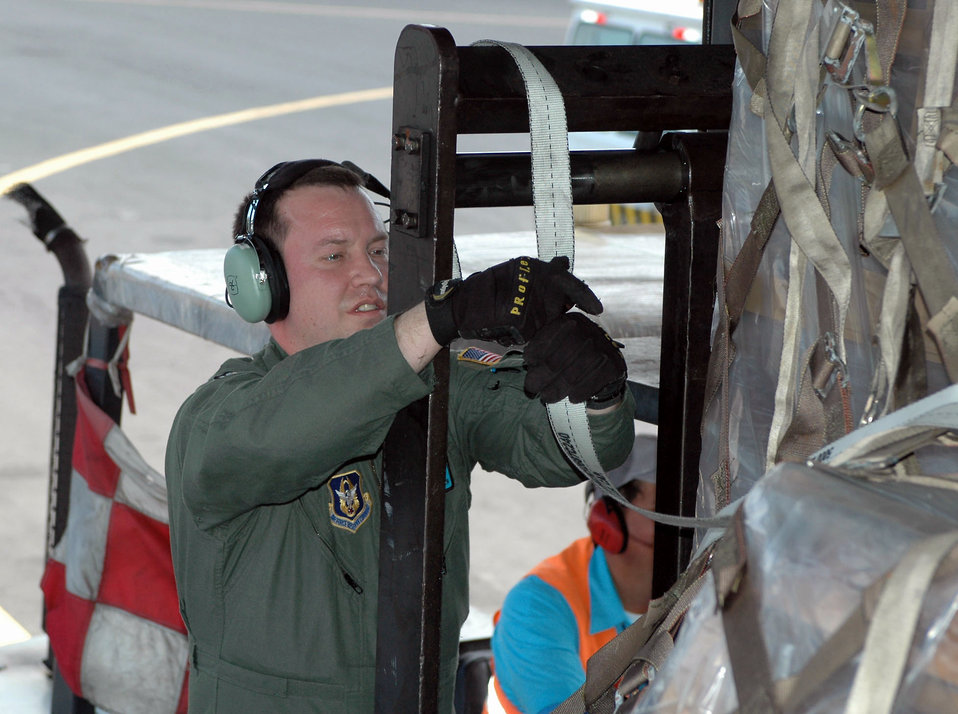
Dover aircrew delivers humanitarian supplies to Nicaragua

Master Sgt. Robert Kaehler secures a pallet of cargo to a forklift Jan. 18 at the Managua International Airport, Nicarauga. A C-17 Globemaster III aircrew from Dover Air Force Base, Del., delivered approximately 18,000 pounds of cargo consisting of desks, chairs, file cabinets and books for use at a Nicaraugan university library. Sergeant Kaehler is a loadmaster with the Air Force Reserve's 326th Airlift Squadron at at Dover AFB.